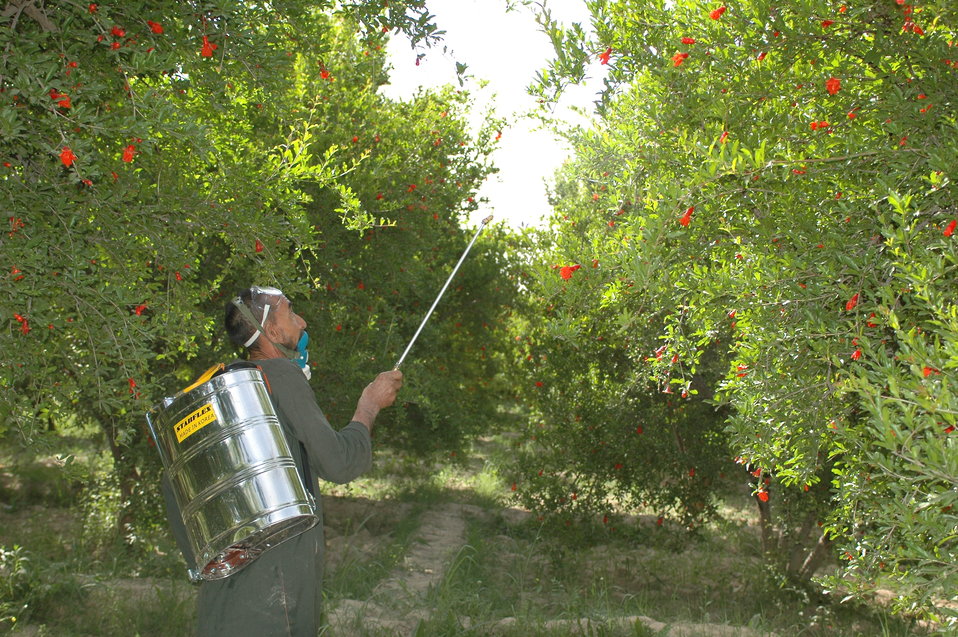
Dr Shah Visits Argandab April 10, 2010